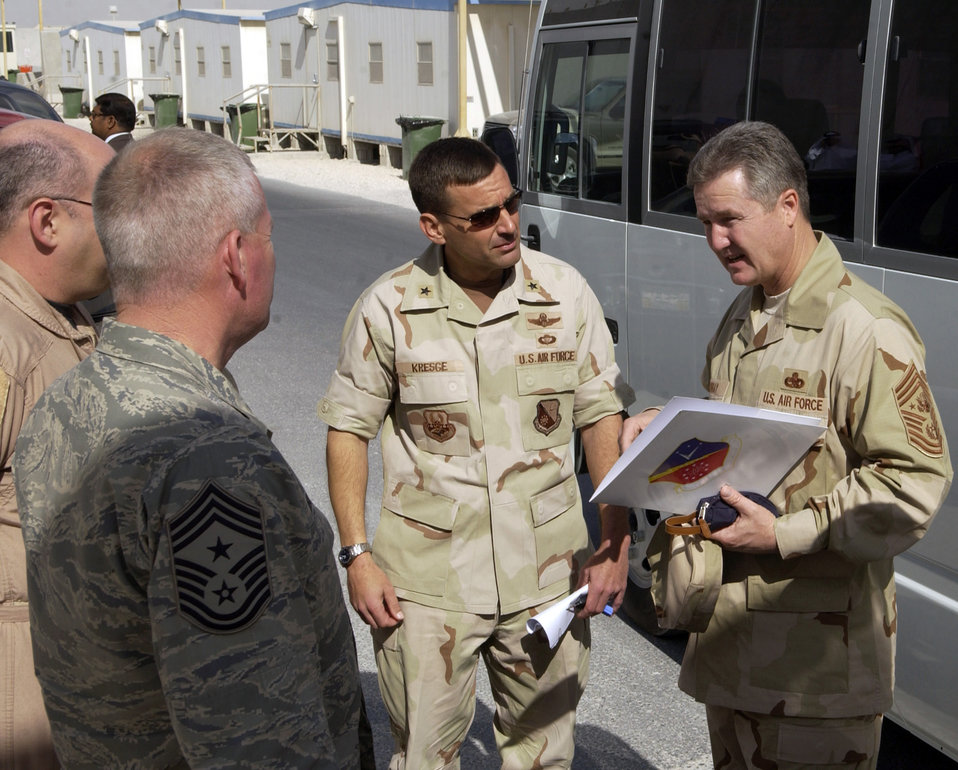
Trip downrange

SOUTHWEST ASIA (AFPN) -- Chief Master Sgt. of the Air Force Gerald R. Murray talks to Brig. Gen. Stanley T. Kresge and other senior leaders during his visit to this desert base. General Kresge is the 379th Air Expeditionary Wing commander.